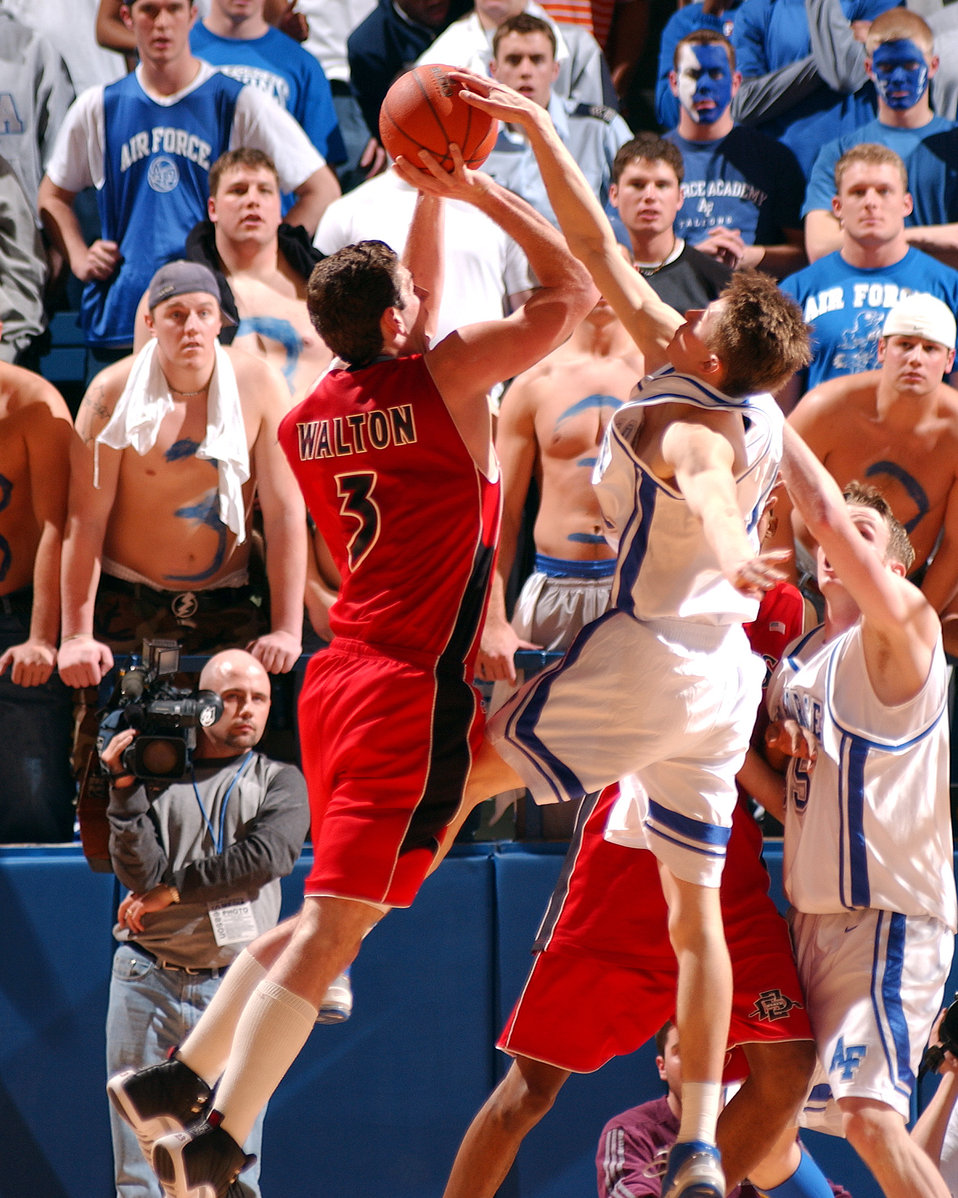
Defense

U.S. AIR FORCE ACADEMY, Colo. -- Air Force senior guard Tim Keller spoils the shot of San Diego State forward Chris Walton, during the Falcon's 61-49 win over the Aztecs. With the win, Air Force boosted its conference record to 11-2 and its overall record to 21-5, winning its first Mountain West Conference championship in men's basketball. The Falcons close out regular season play March 6 at the University of Wyoming.